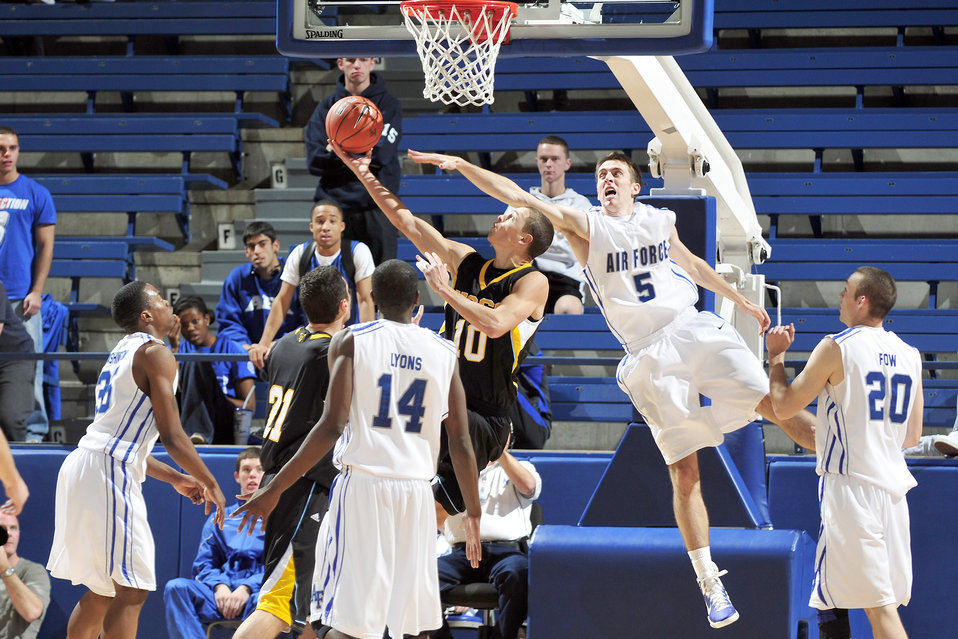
Falcons vs UCCS

Falcons sophomore guard Mike Fitzgerald goes for the block against Mountain Lion forward Brent Jones during the Air Force home opener against the University of Colorado at Colorado Springs Nov.14, 2010, at the Academy's Clune Arena in Colorado Springs, Colo. The Falcons defeated UCCS 66-53.